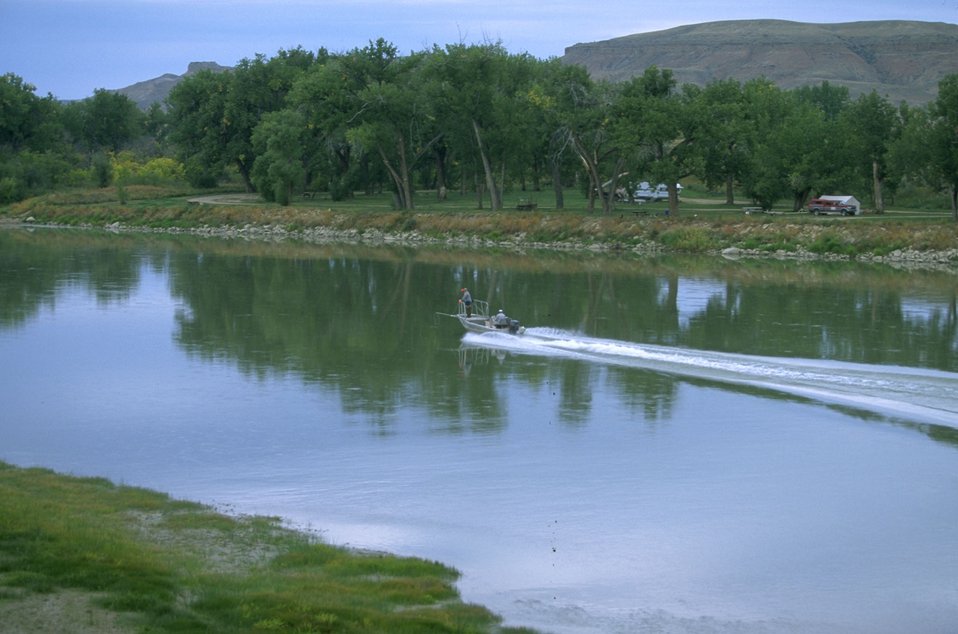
Judith Landing along the Upper Missouri National Wild and Scenic River with MT Dept of Fish Wildlife and Parks fish shocker boat in water